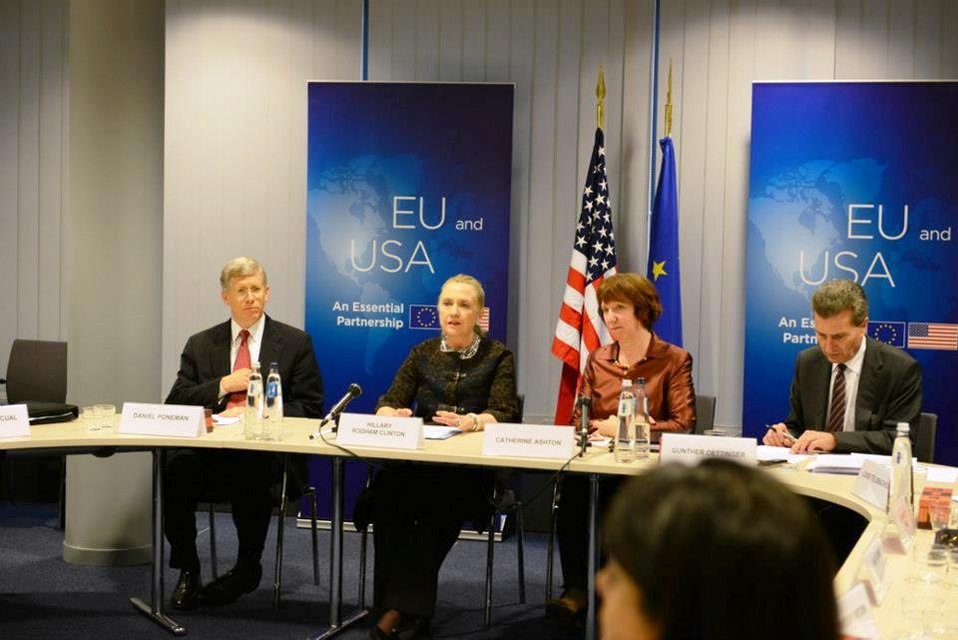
Secretary Clinton Participates in the U.S.-EU Energy Council Meeting

U.S. Secretary of State Hillary Rodham Clinton participates in the U.S.-EU Energy Council meeting in Brussels, Belgium, December 5, 2012. Also pictured in the photo are U.S. Deputy Secretary of Energy Daniel Poneman, left, EU High Representative Catherine Ashton, center right, and EU Energy Commissioner Günther Oettinger, right.